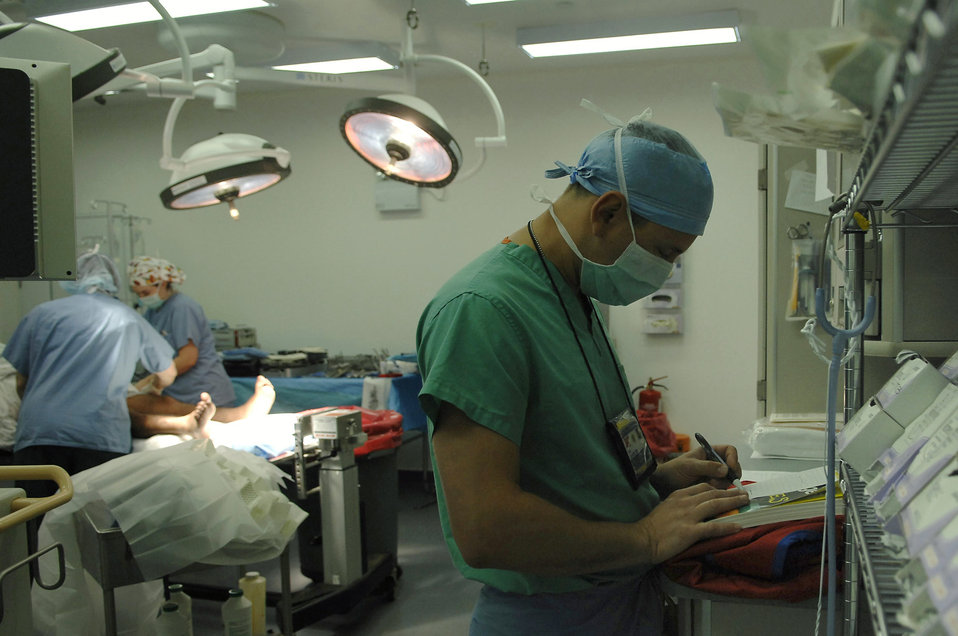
A new leg to stand on

Maj. (Dr.) Michael Charlton draws out a procedure plan before commencing surgery July 2 at Joint Base Balad, Iraq. A new rod and screws, along with a bone graft taken from the patient's hip, will be used to correct an injury that has not healed properly. The corrective surgery should allow the patient to walk again. Doctor Charlton is a 332nd Expeditionary Medical Operations Squadron orthopedic trauma surgeon deployed from Lackland Air Force Base, Texas.